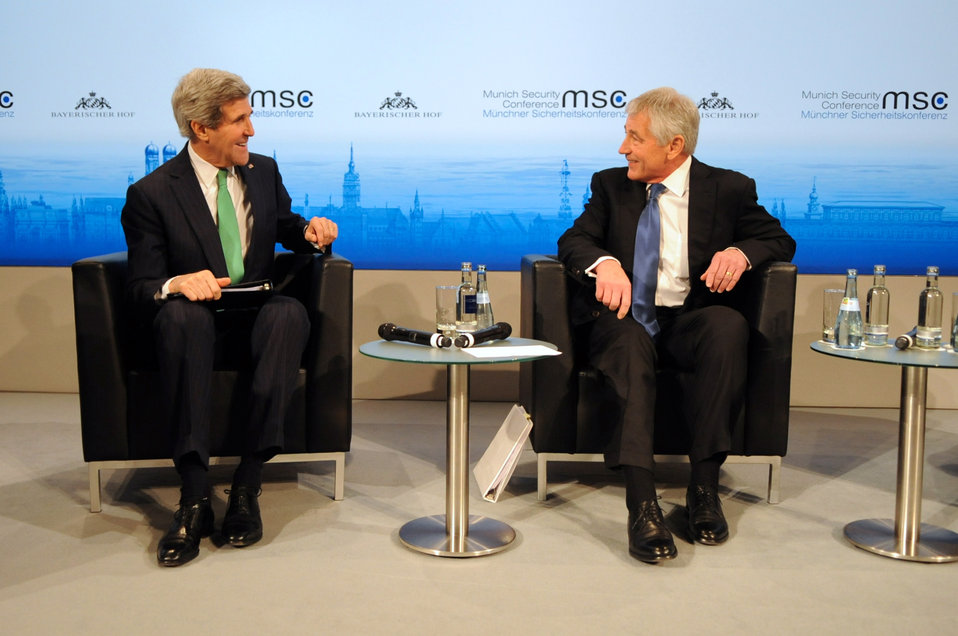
Secretaries Kerry, Hagel Share a Laugh Before a Joint Panel Discussion at Munich Security Conference

U.S. Secretary of State John Kerry and U.S. Secretary of Defense Chuck Hagel share a laugh before addressing and responding to questions at the 50th Munich Security Conference in Munich, Germany, on February 1, 2014.